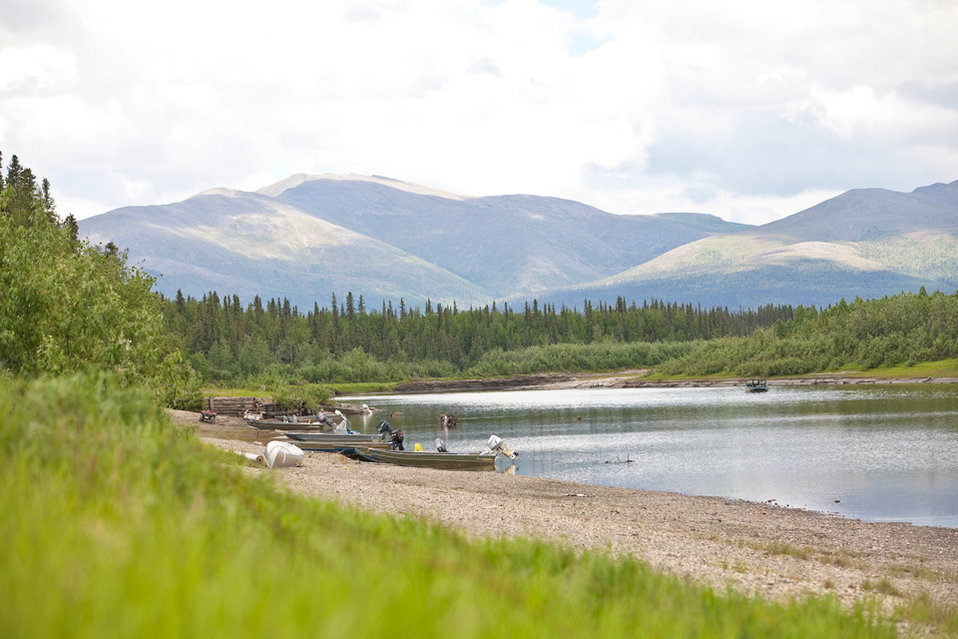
Alaska's Future in Renewable Energy

In Alaska's rural villages, many families struggle with the impact of high energy costs -- often times, almost half of a family's income is spent on fuel to power a home. To face this, the Department of Energy's Office of Indian Energy works closely with tribal nations, state government, NGOs, and the private sector to help tribes develop the energy resources that exist on tribal lands.

NANA is an organization that operates in northwest Alaska -- the region pictured in the pastoral landscape above. Through building businesses and using smart development of Alaskan resources, NANA's strategic energy plan involves expanding sources of renewable energy, with the goal of reducing the region's dependence on fossil fuels by 50 percent by the year 2025.